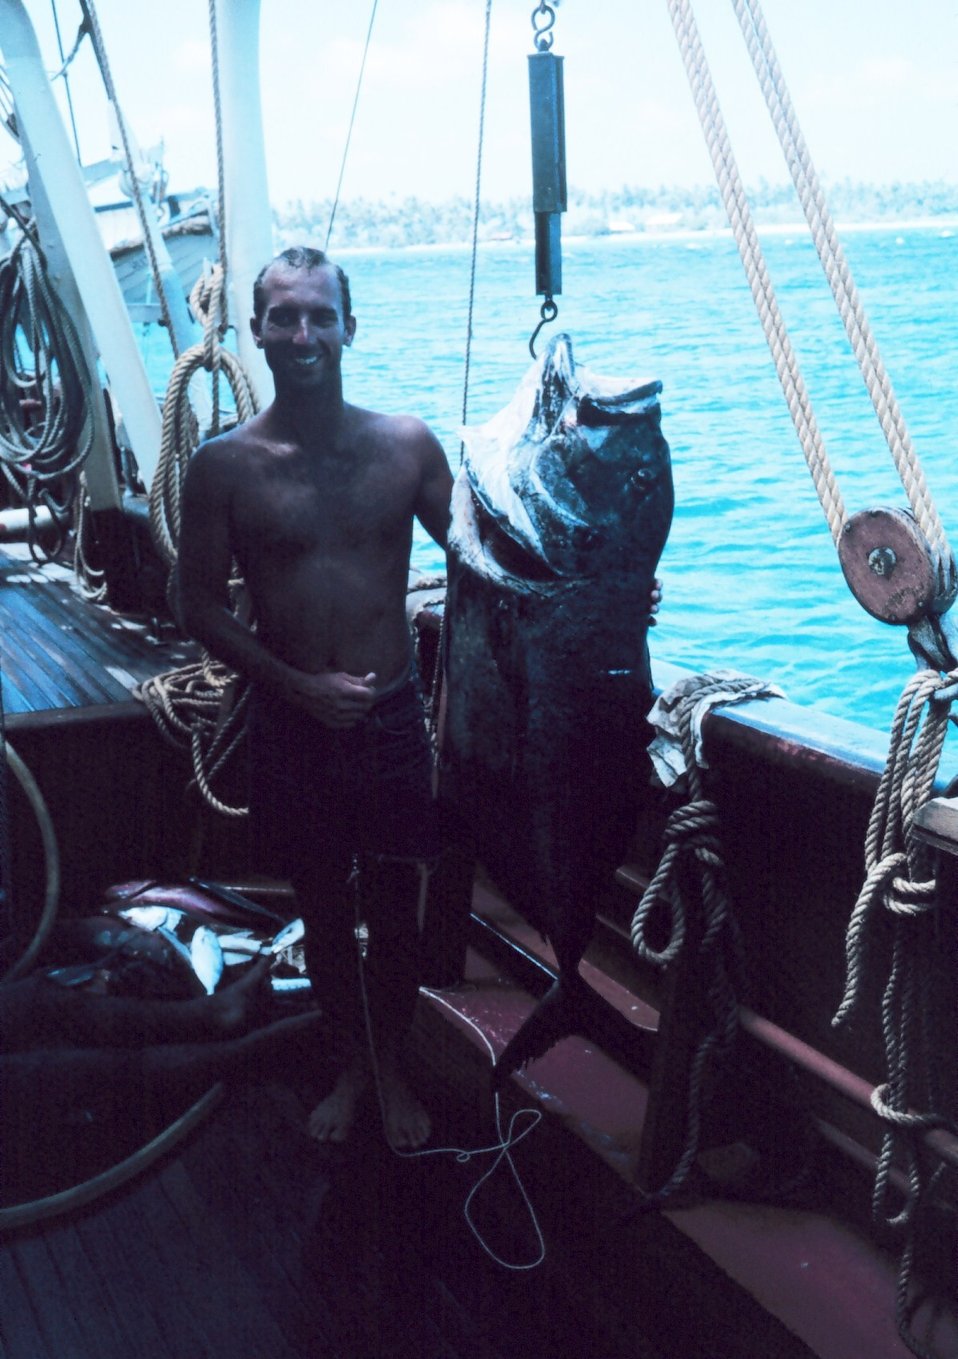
A giant trevally caught by Dr. Jim McVey